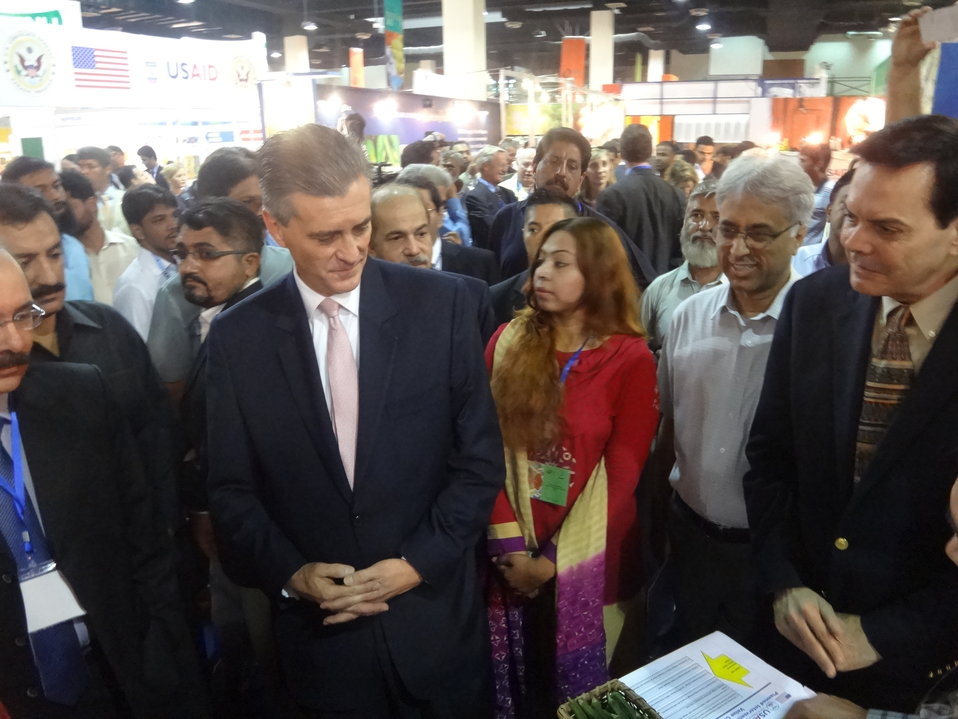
US Ambassador's visit to The Agribusiness Project at TDAP Expo, Karachi, September 27, 2013 (8)